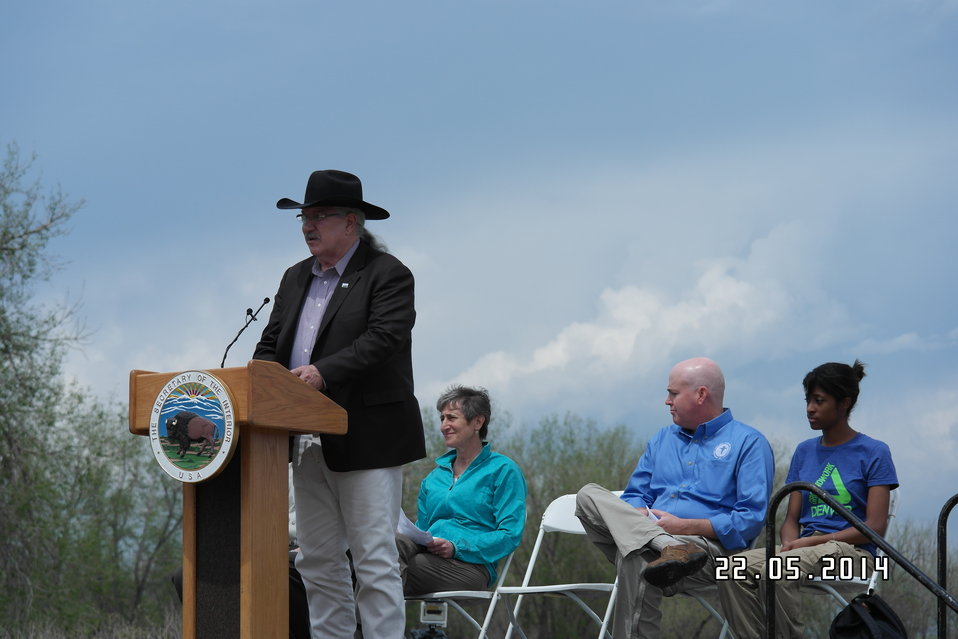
Secretary Jewell Announces $6.7 for Youth Conservation Jobs

Jewell made the announcement at an event at Rocky Mountain Arsenal National Wildlife Refuge outside Denver, Colorado, where she was joined by U.S. Department of Agriculture (USDA) Deputy Under Secretary for Natural Resources and the Environment Arthur “Butch” Blazer; Greg Knadle, Vice President for Government Relations of the National Fish and Wildlife Foundation (NFWF); Refuge Manager David Lucas and youth corps members of Groundwork Denver.